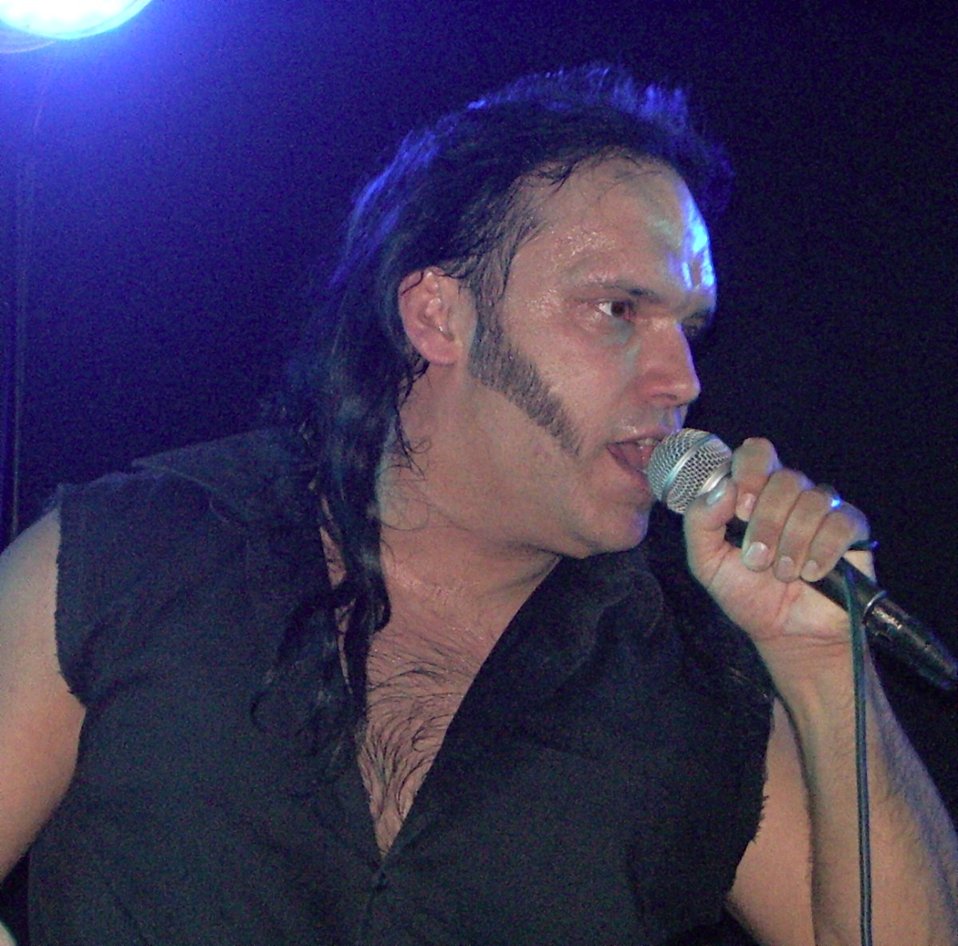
Blaze Bayley at the CC Club Čeština: Zpěvák Blaze Bayley v klubu CC Club